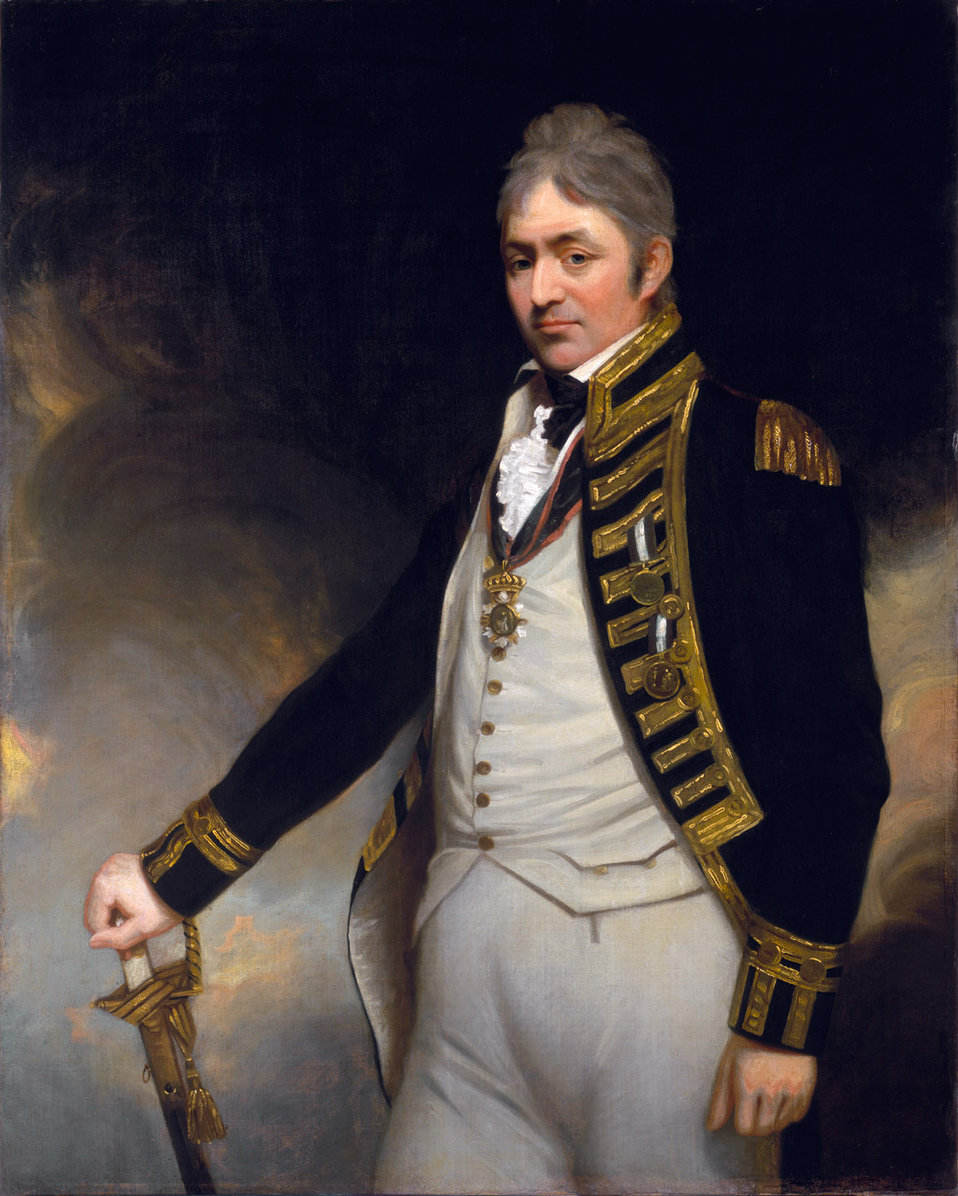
Sir Thomas Troubridge, 1st Baronet